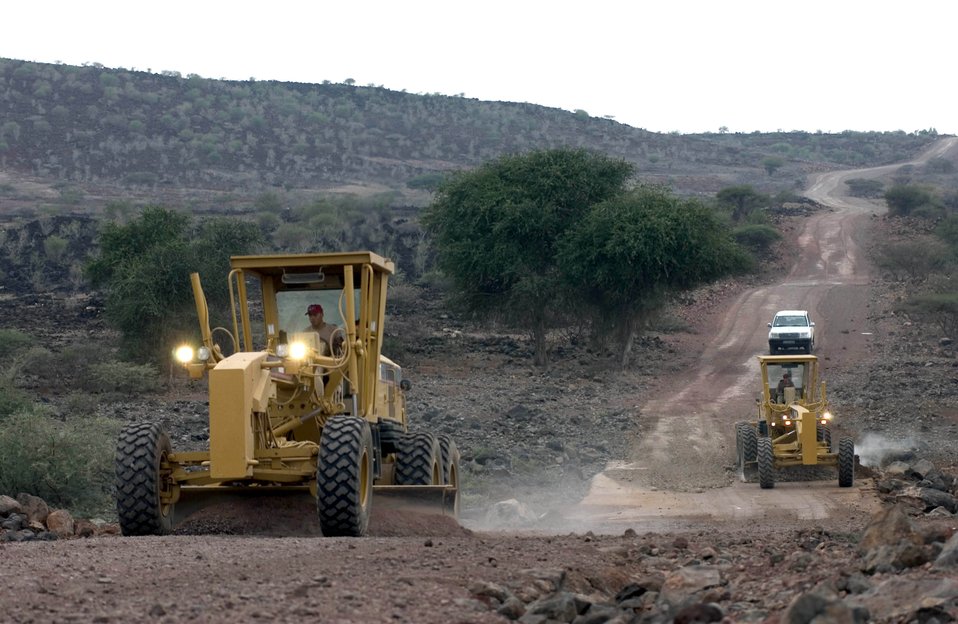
Building relationships one mile at a time

NEAR DJIBOUTI, Djibouti -- Heavy equipment operators from the 823rd Expeditionary Red Horse Squadron level 10 miles of the Hol Hol road, which connects the town of Hol Hol with Djibouti City. The squadron is based at Hurburt Field, Fla., and is assisting the Combined Joined Task Force -- Horn of Africa to establish a secure environment and enable regional stability.